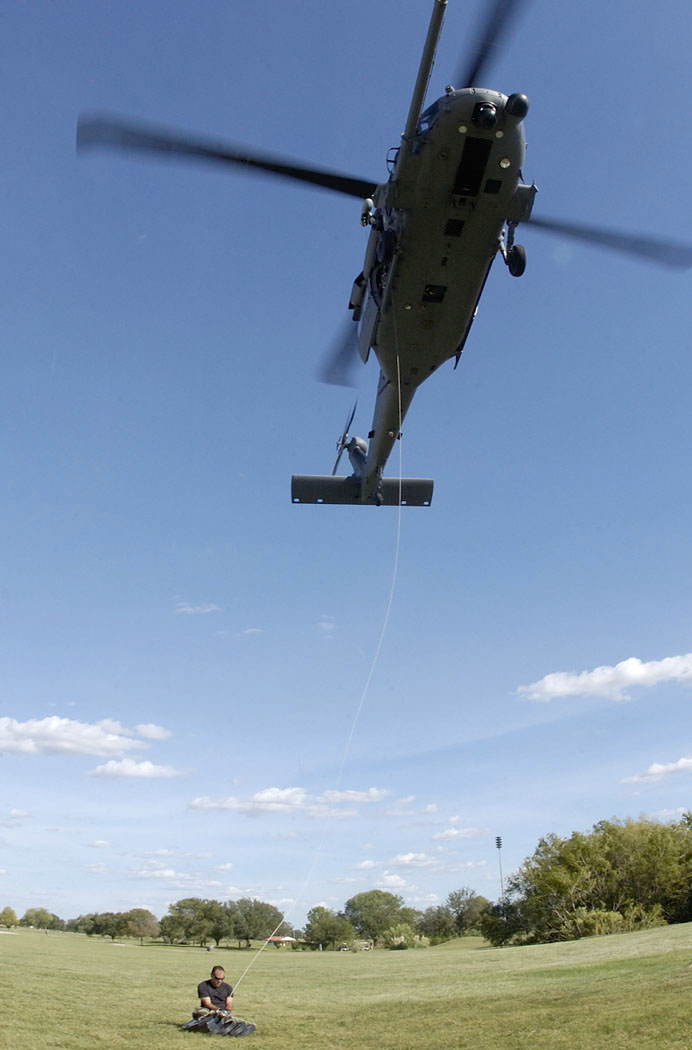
Search and rescue missions underway

RANDOLPH AIR FORCE BASE, Texas -- Senior Airman Ronald Arroyo attaches a 600-pound weight to the rescue cable of an HH-60 Pave Hawk for an operational test prior to its departure on a search and rescue mission over southern Texas Sept. 24. Airman Arroyo is a crew chief from the 920th Rescue Wing, Patrick Air Force Base, Fla.